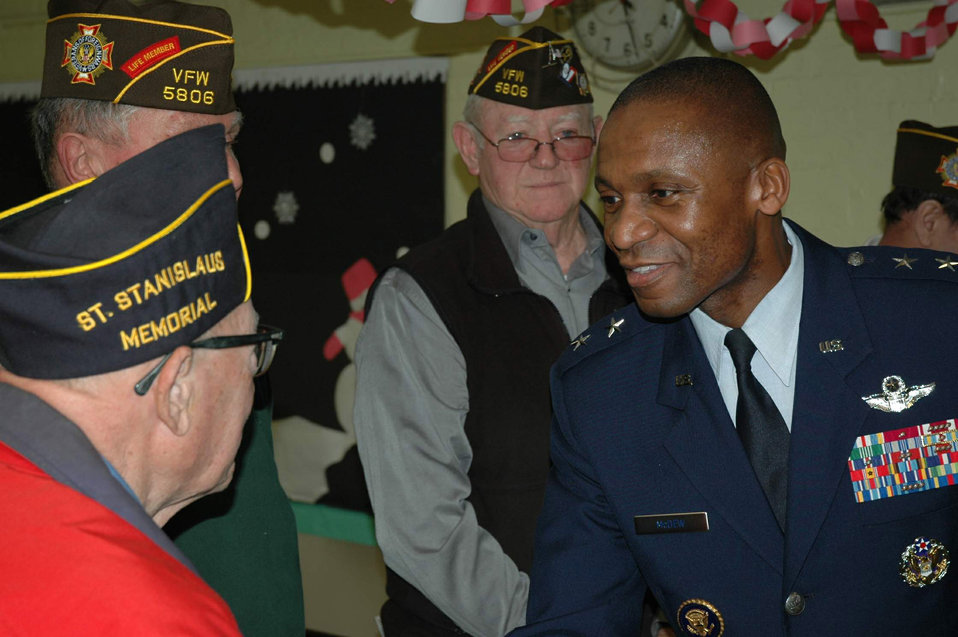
Generals re-enforce 'citizenship day' with core values

Maj. Gen. Darren W. McDew shakes hands with Brooklyn veterans during a citizenship day event at Public School 34 in Brooklyn, NY, Feb. 11. General McDew had previously spoken to fourth and fifth graders at the Brooklyn school about examples of excellence, where he pointed to the veterans in the audience as such individuals. General McDew is the director of Public Affairs, Office of the Secretary of the Air Force.